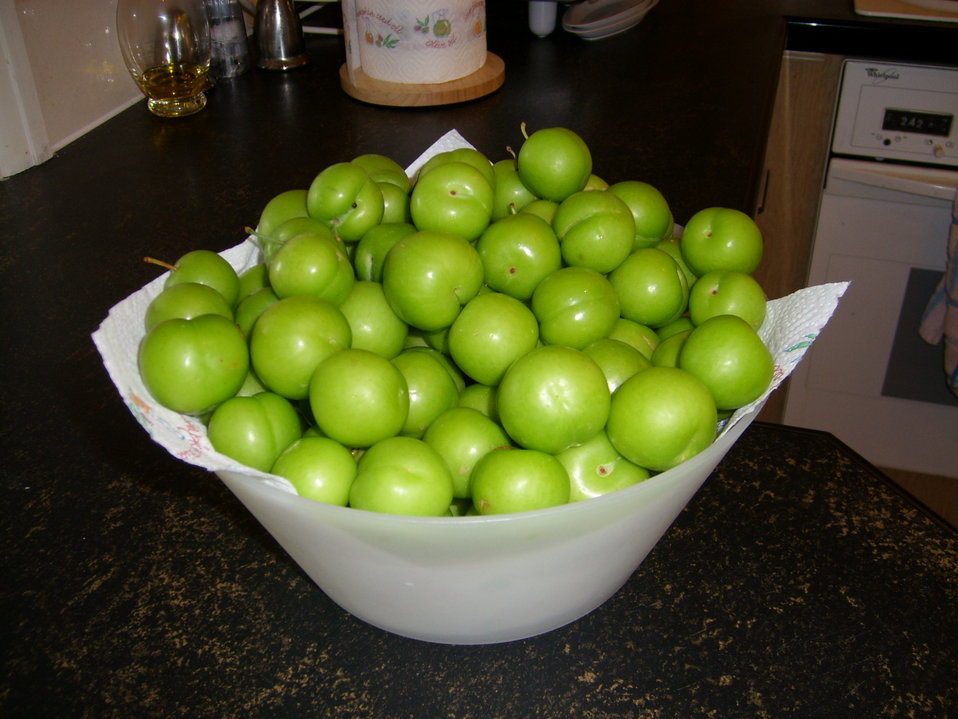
A bowl of wild green plums variously called ganerik, 'Can Eric' or Ganarek, from my garden. It is to depict this special fruit grown in Bdadoun, Lebanon.